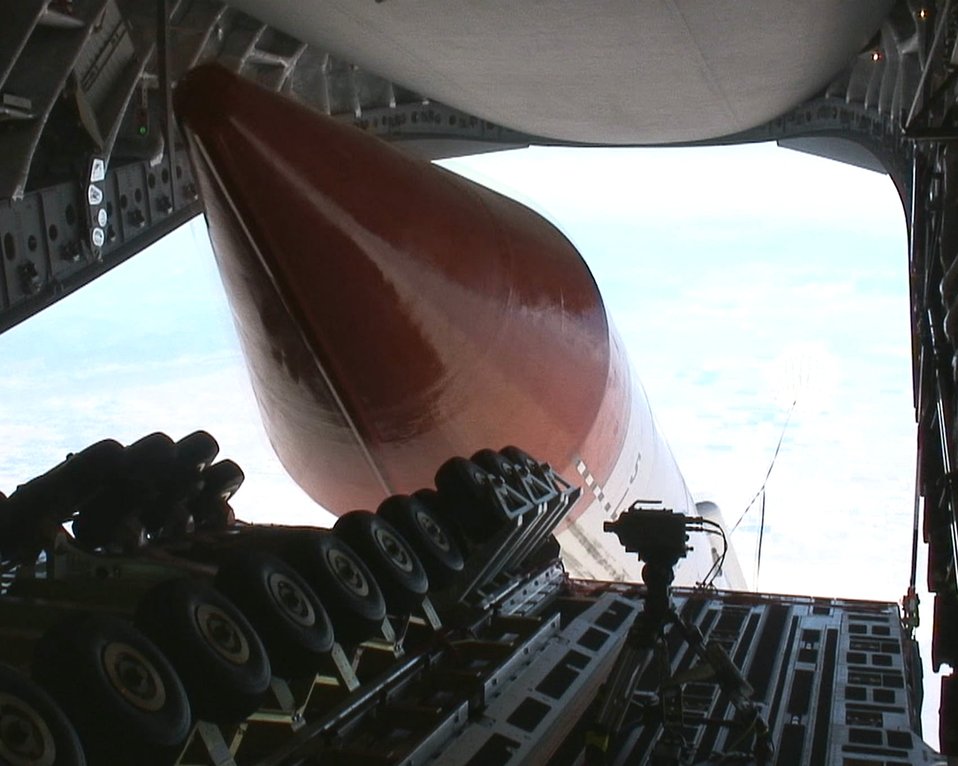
Edwards team performs second test of small launch vehicle

A Falcon small launch vehicle is airdropped from a C-17 Globemaster III at Edwards Air Force Base, Calif., on Wednesday, June 14. The Falcon SLV project, a joint venture between the Defense Advanced Research Projects Agency and the Air Force, is designed to develop a new method for putting satellites into low-earth orbit. The 32.5-ton test vehicle is the heaviest object ever dropped from a C-17.